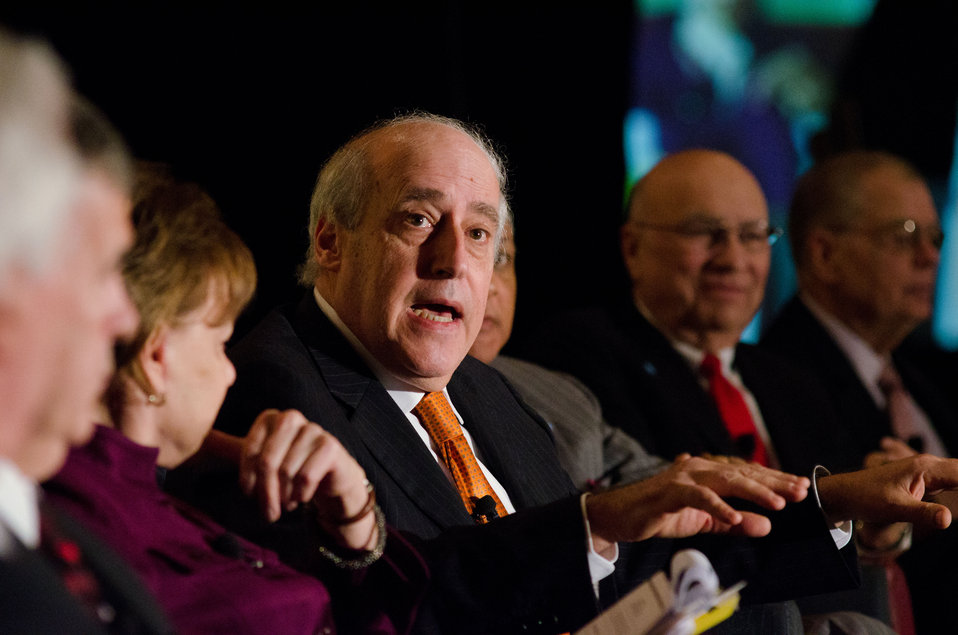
At the 2012 Agricultural Outlook Forum, “Moving Agriculture Forward” in Arlington, VA, held on Thursday, February 23, 2012, 7 former Secretaries of Agriculture sat on the plenary panel “Visions of the Future” hosted by current Agriculture Secretary Tom Vilsack. Former Congressman Dan Glickman (KS) speaks out during the panel discussions.USDA Photo by Lance Cheung.